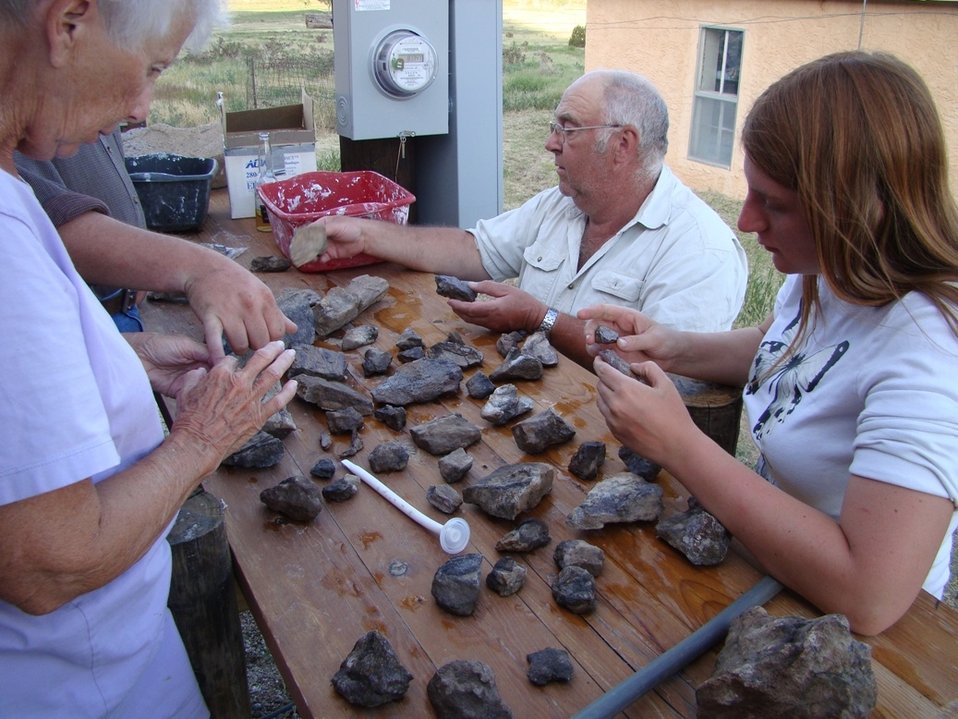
dinosaur volunteers clean bone fragments May 2012

( left to right) Passport in Time volunteers Ruth Ann White, (left) Leroy Frazier, and Laura Clarke reassemble weathered dinosaur bones from a newly discovered site in Picket Wire Canyonlands on the Comanche National Grassland in southwest Colorado in May 2012.